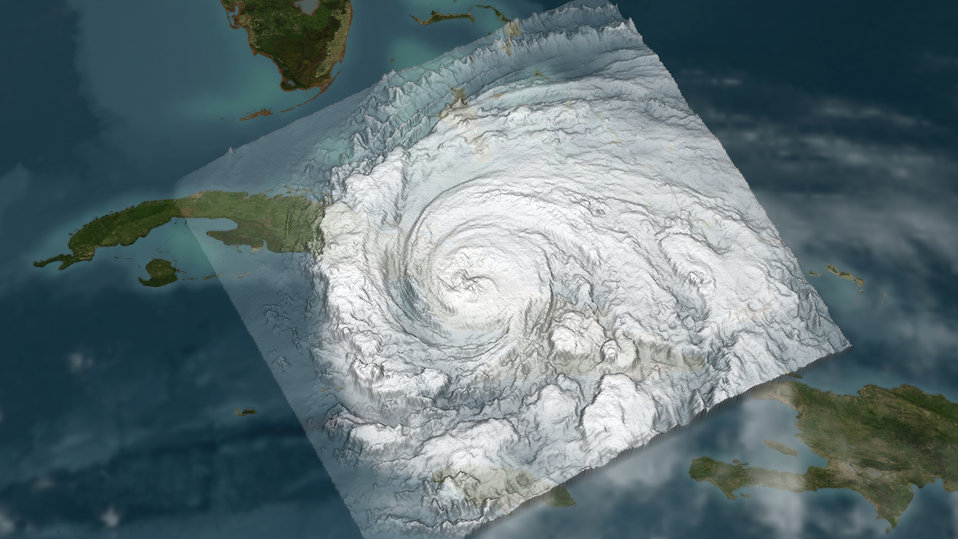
Hurricane Ike Slams Cuba at 7:04 EDT September 8, 2008